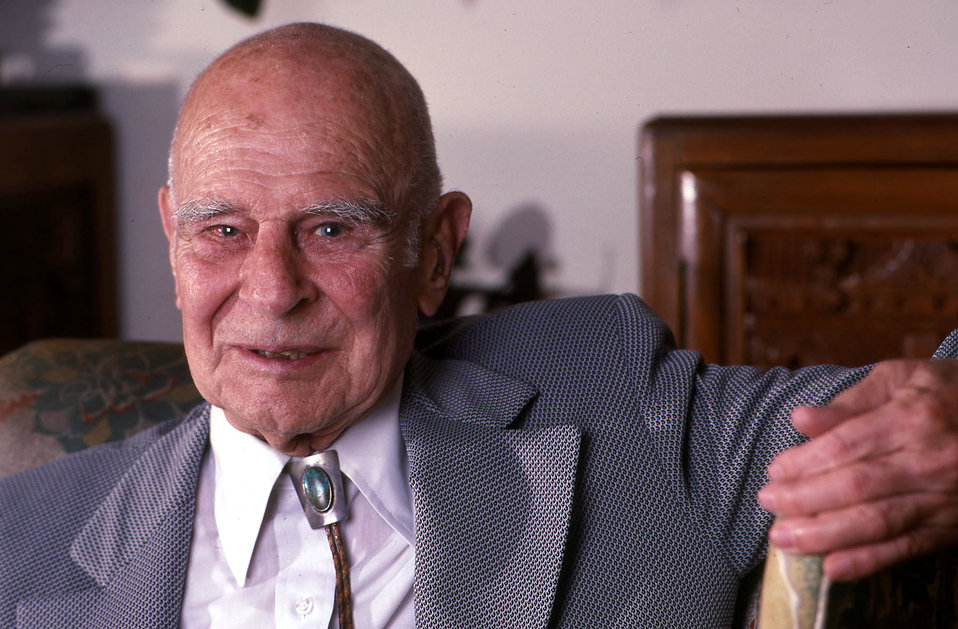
Gen. Jimmy Doolittle tells his story in an interview with Airman magazine in 1986.